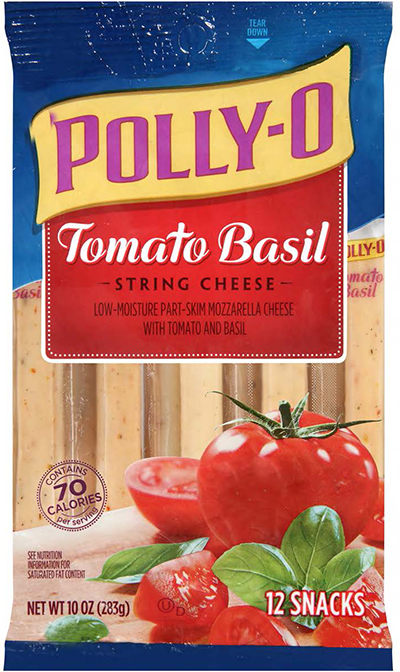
RECALLED – Cheese

October 25, 2013 – Product Recall – Kraft Voluntarily Recalls Some Varieties of Kraft And Polly-O String Cheese And String Cheese Twists Due to Premature Spoilage.